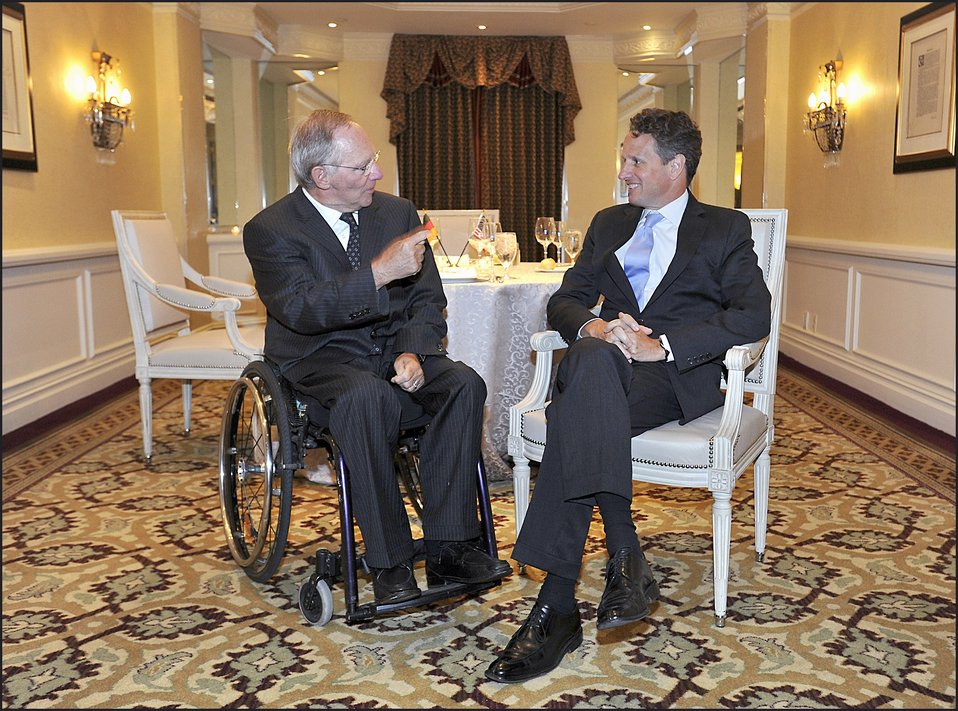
German Finance Minister Wolfgang Schäuble

On Monday, June 6, 2011, Secretary Geithner met with German Finance Minister Wolfgang Schäuble on the sidelines of Chancellor Merkel's official visit to Washington.